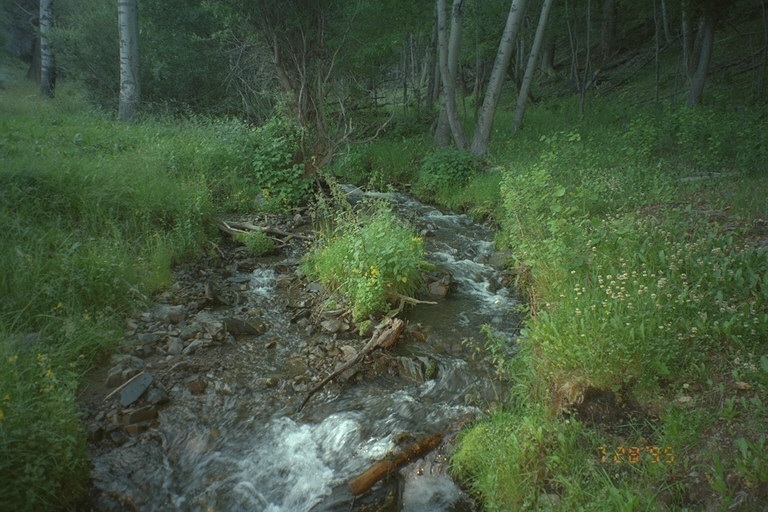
Riparian area Public Lands Salmon Field Office UCSC Upper Columbia Salmon Clearwater District